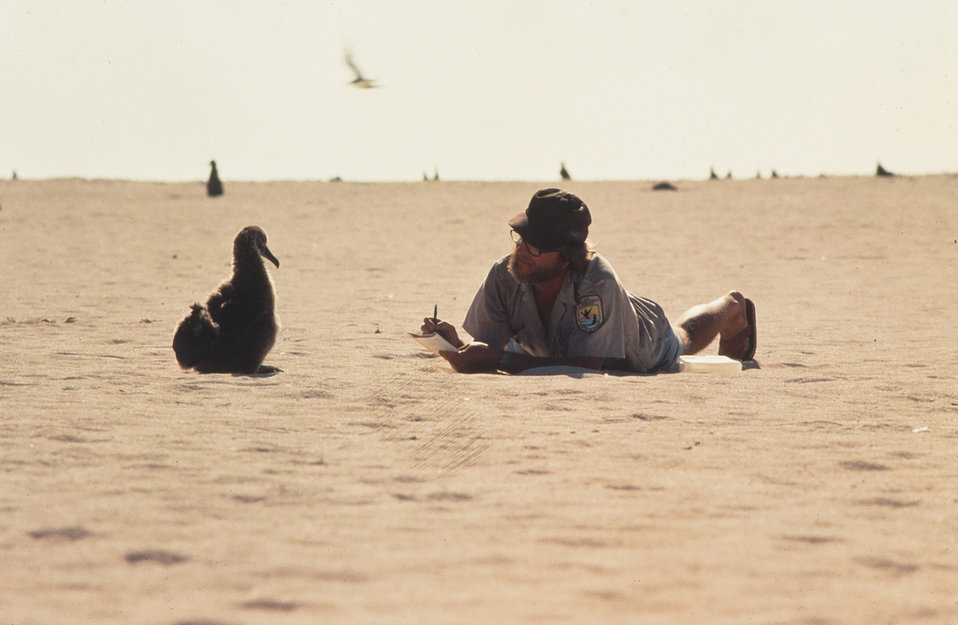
interview with an albatross

Midway Atoll National Wildlife Refuge, Pacific Islands
January 2011